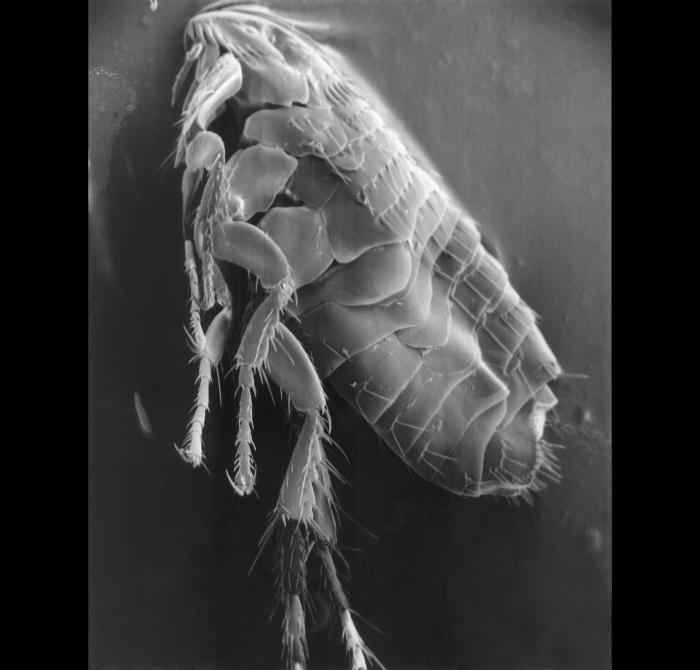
Scanning electron micrograph (SEM) of a parasitic flea.